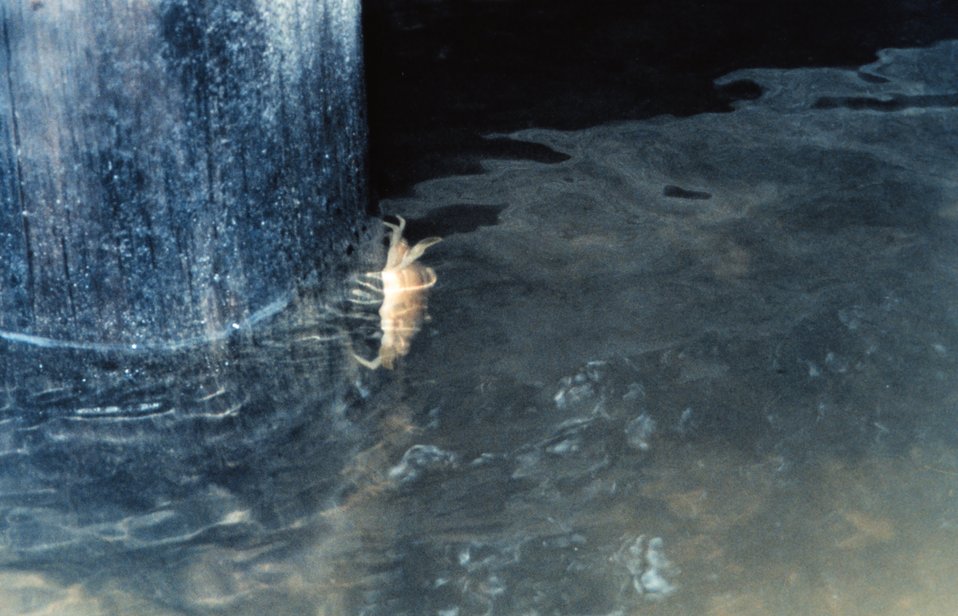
Blue crab, Callinectes sapidus, on a piling